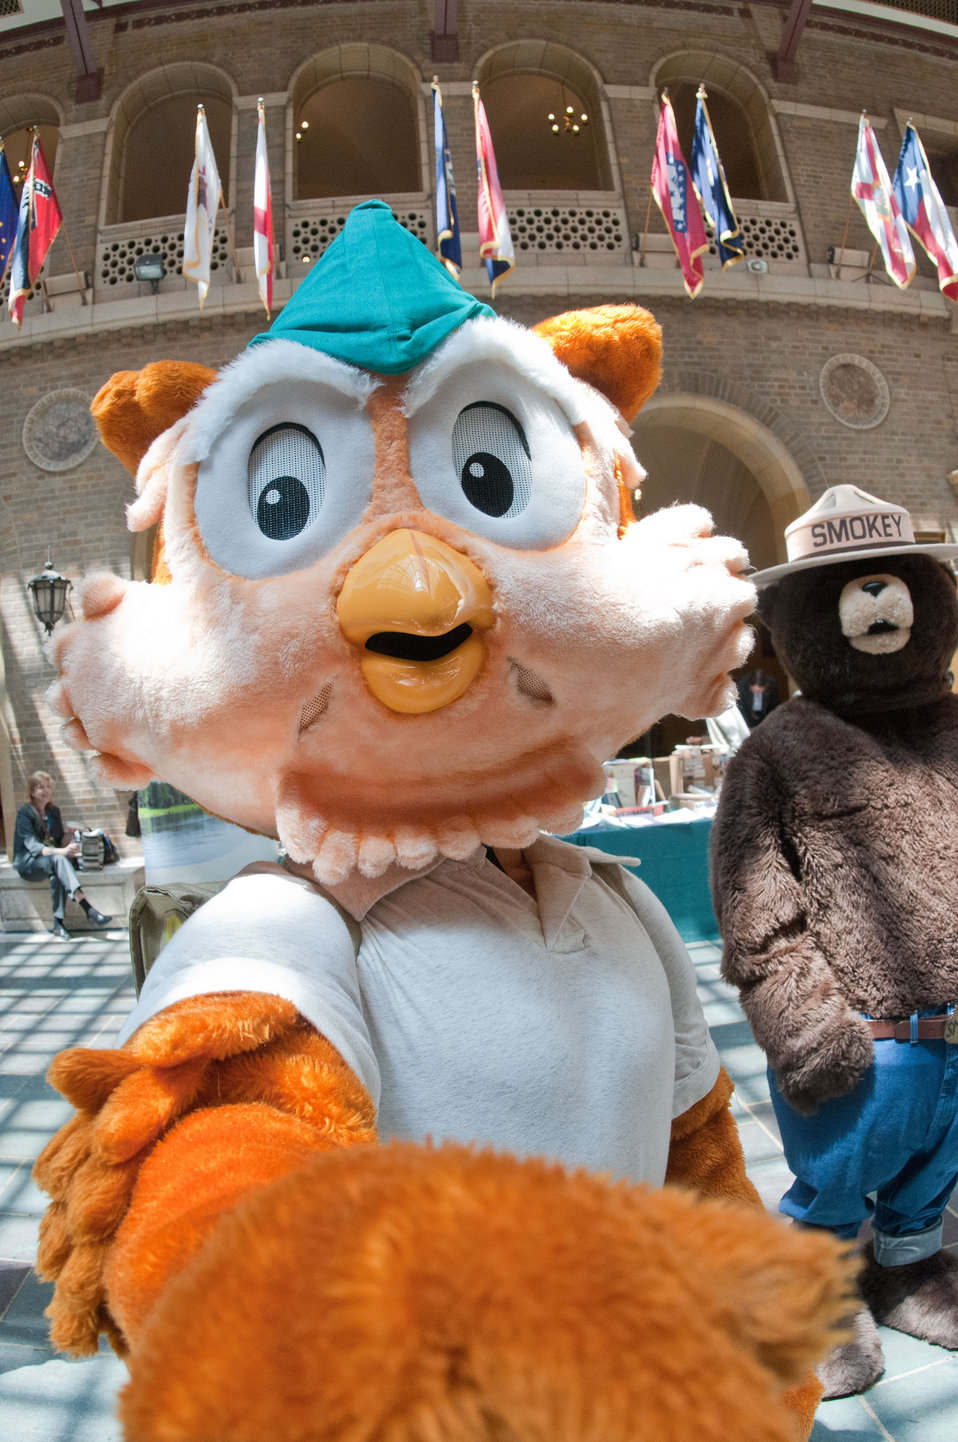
Woodsy Owl at the International Year of Forests (IYOF) celebration celebration on Friday, June 3, 2011 on the Patio of the Whitten Building, U.S.Department of Agriculture in Washington, DC.